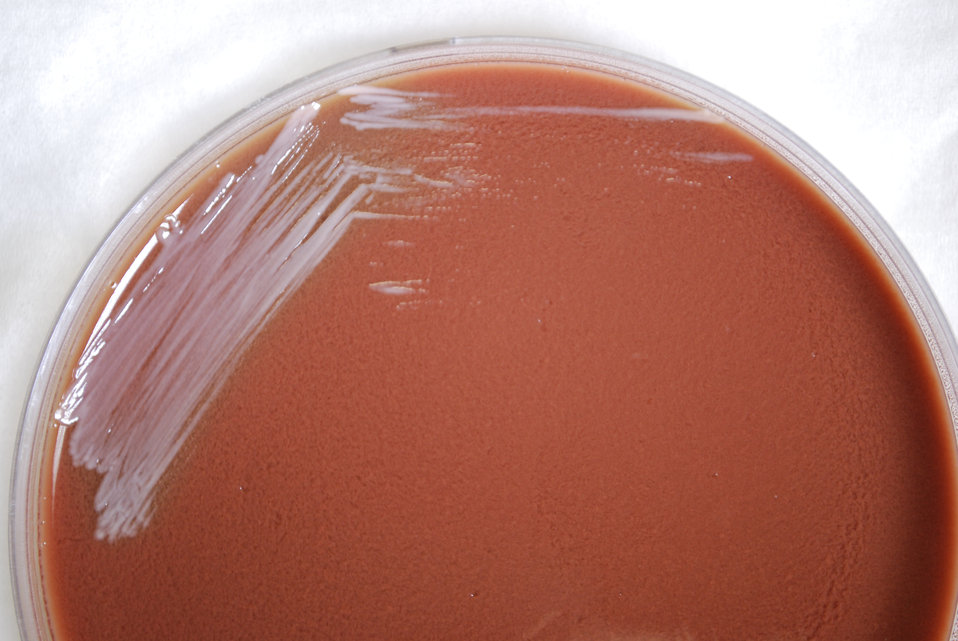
As a closer view of PHIL 12249, this photograph depicts the colonial morphology displayed by Gram-negative Burkholderia mallei bacteria, which was grown on a medium of chocolate agar, for a 24 hour time period, at a temperature of 37�C.What are the symptoms of glanders?